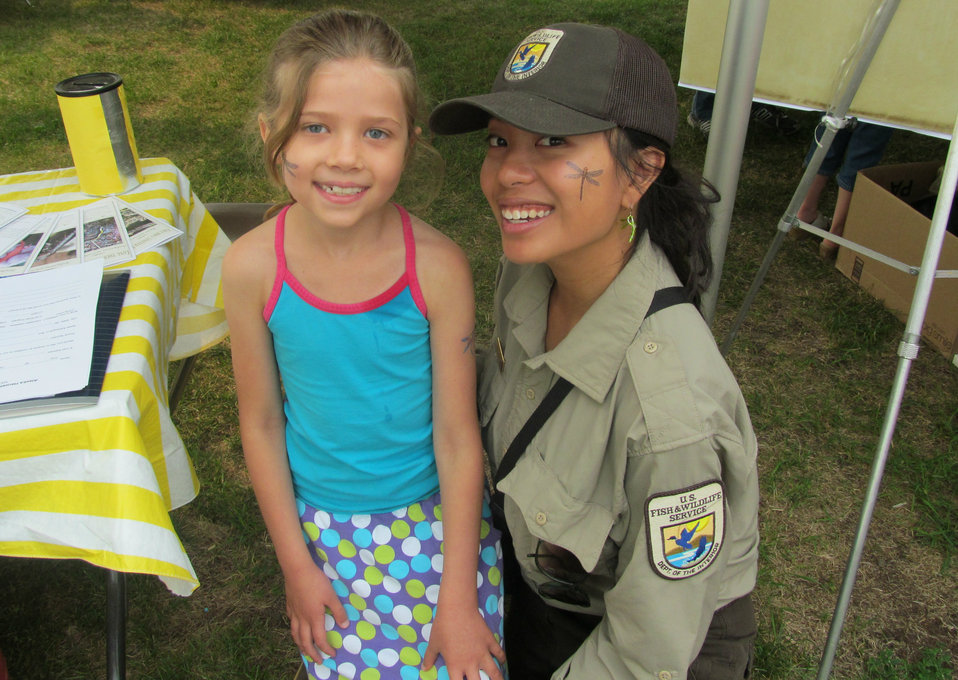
Showing off dragonfly tattoos

(USFWS)